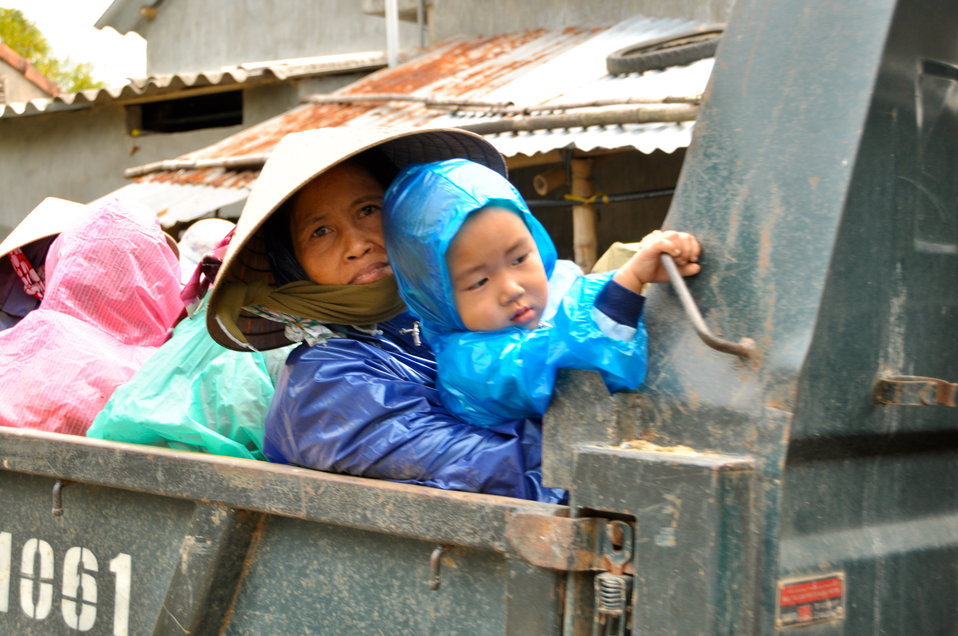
USAID and Save the Children support community evacuation drill and emergency preparedness in central Vietnam

Loc An Commune, Phu Loc District, Thua Thien Hue Province
December 4, 2012, Photo: Richard Nyberg, @USAIDVietnam